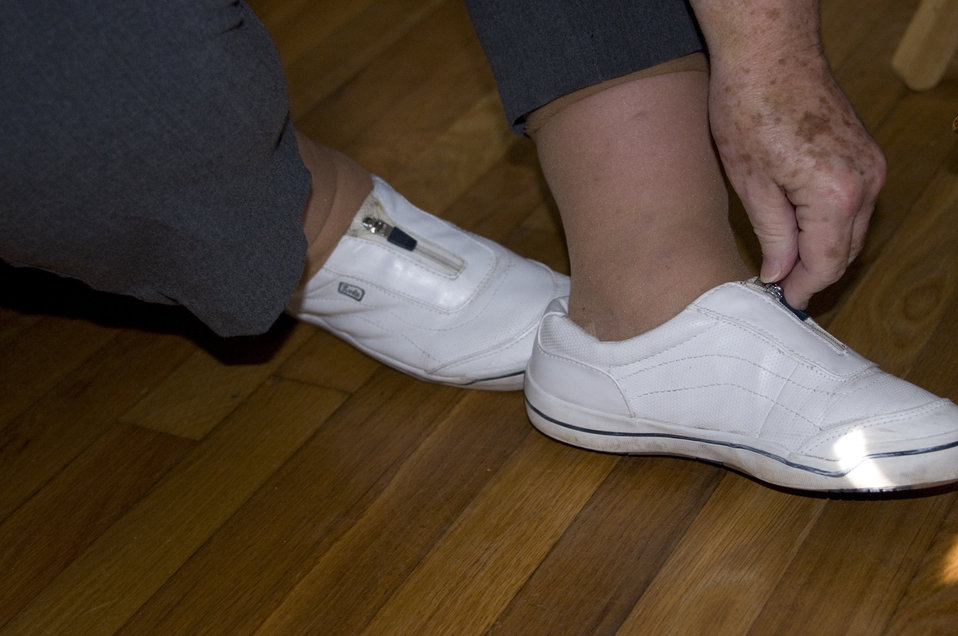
After having donned her stocking with the help of a sock-donning device (see PHIL 13937), this female rheumatoid arthritis patient was pictured here in the process of putting on her easy slip-on sneakers, which were secured by a zipper, rather than laces. Due to her arthritic condition, the zipper was much easier to use than having to tie shoe laces.